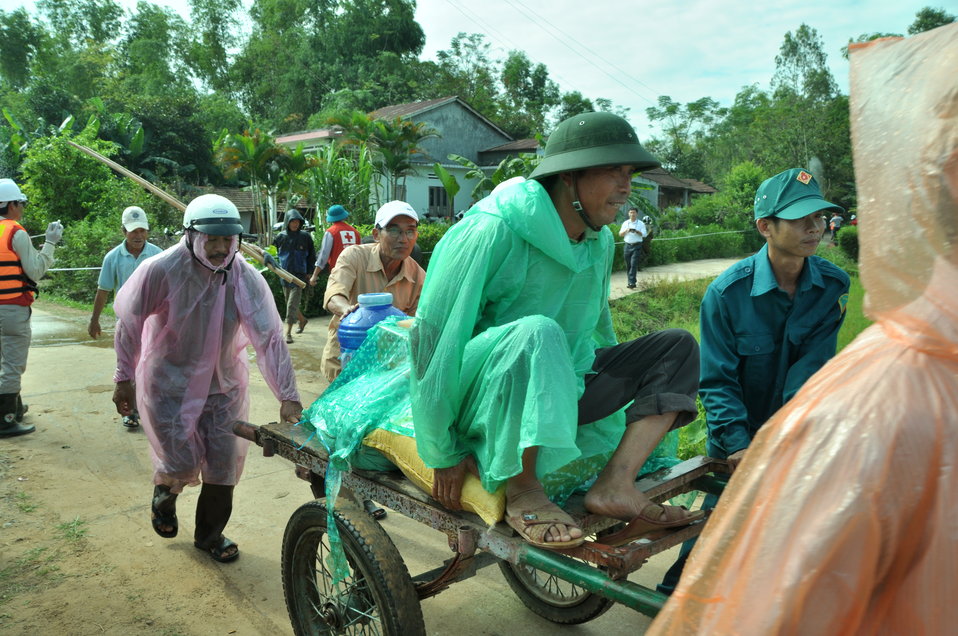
USAID, Red Cross Support Disaster Response Drill in Duy Hoa Commune, Quang Nam Province

Duy Hoa Commune, Quang Nam Province
December 5, 2012